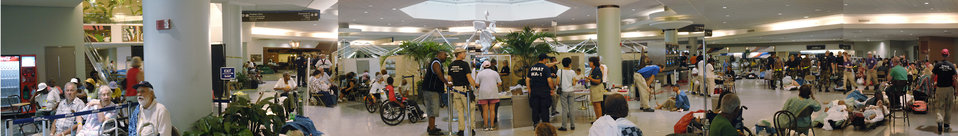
Evacuation

NEW ORLEANS -- Air evacuation patients go through reception and in-processing in the ticketing and departure section of the Louis Armstrong New Orleans International Airport on Sept. 1. Disaster medical assistance teams provide most of the care and processing at this first stage, and military units provide support to them.